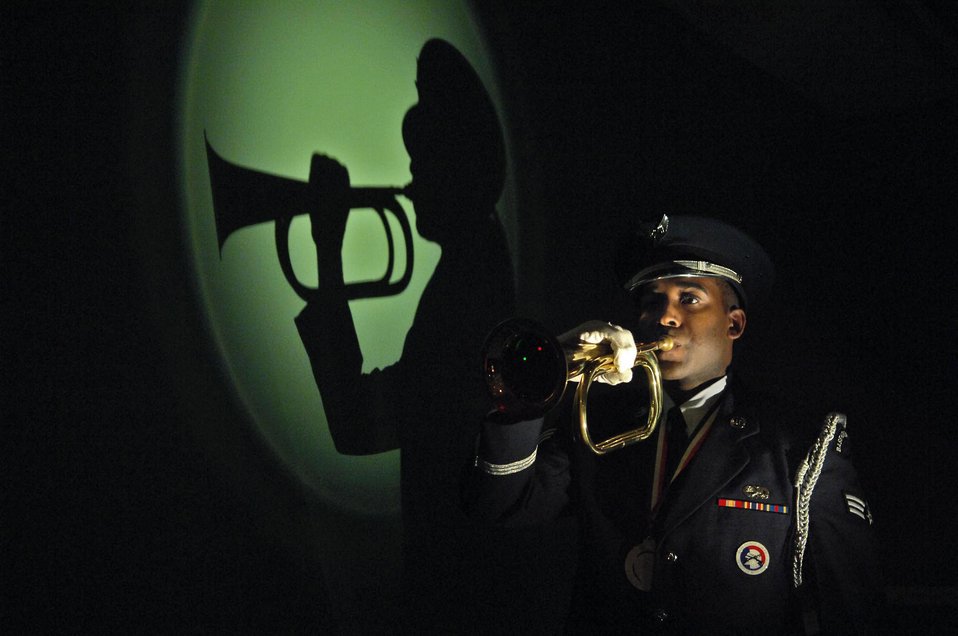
It's an honor

Senior Airman Alan Howard plays the bugle at an annual awards banquet Jan. 26 hosted by members of the 20th Fighter Wing at Shaw Air Force Base, S.C. Airman Howard, the wing's Ceremonial Airman of the Year, is a member of the base honor guard.